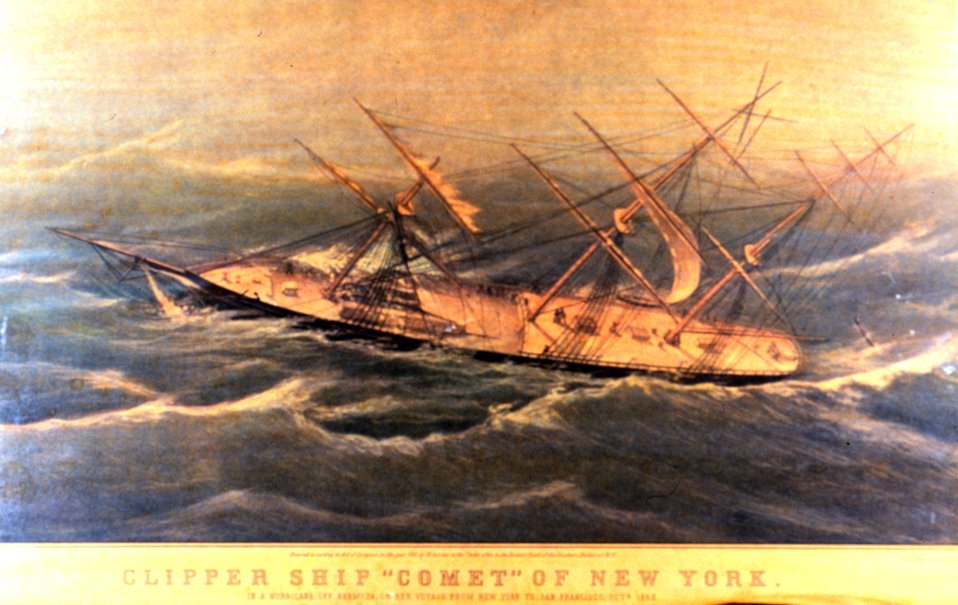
'The Clipper Ship 'Comet' of New York' laboring in heavy hurricane seas off Bermuda in October 1852. This is from a Currier and Ives print pasted on a wood backing. The original print was completed in 1855.